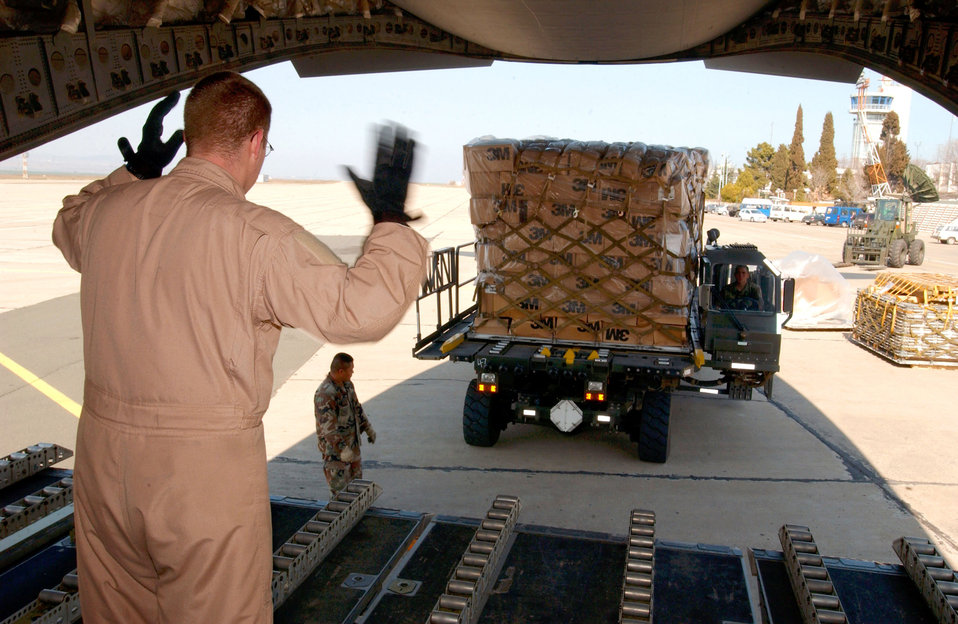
Steady as she goes

OPERATION IRAQI FREEDOM -- A crewmember guides a pallet of cargo onto a C-17 Globemaster III. The aircraft landed a Burgas Airport on its way to deliver humanitarian aid to the people of Iraq.